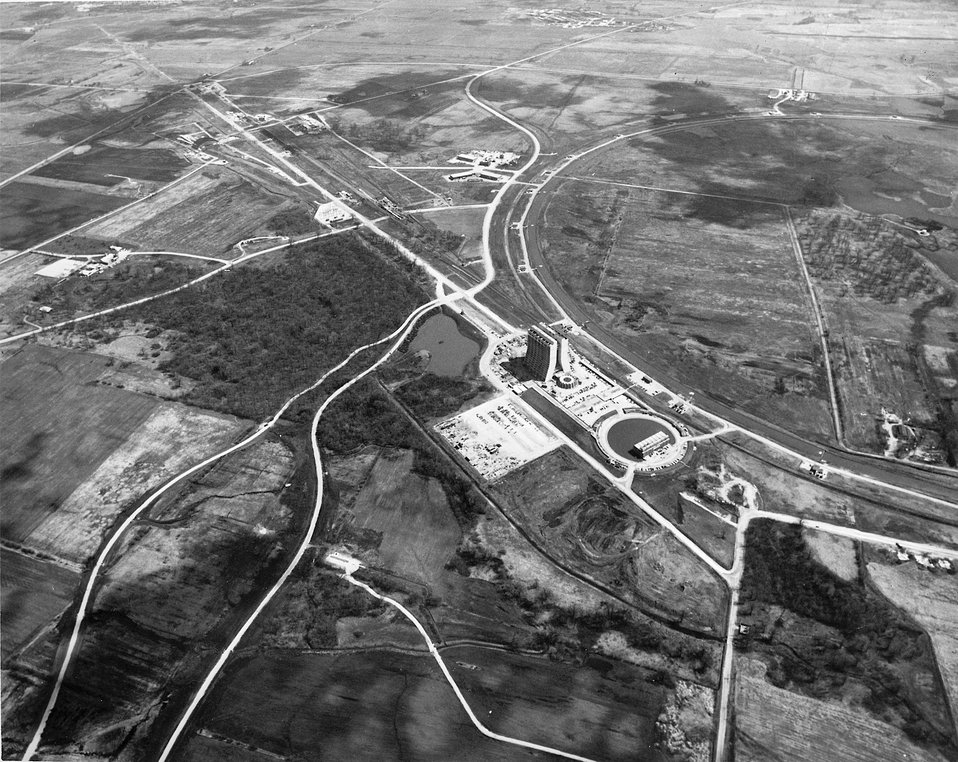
'Footprint' area, contains the central lab building (center left) the Rooster ring (center right) and the linear accelerator (rectangular building to right of the Lab).
c.1973